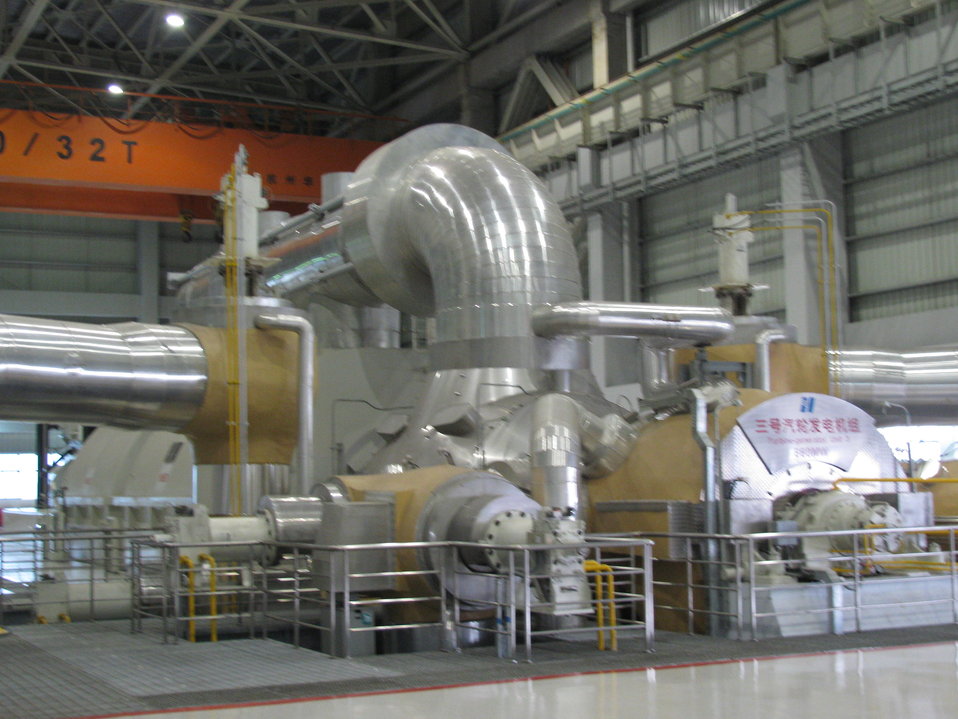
Shanghai 008